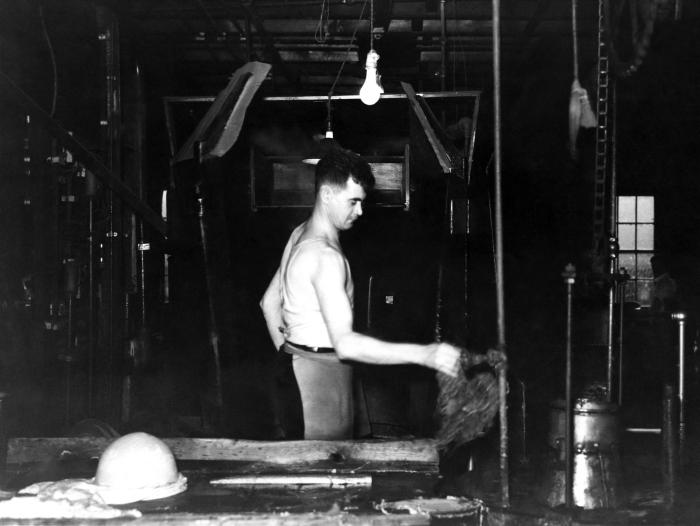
This historical image was provided by the Center for Disease Control's (CDC), National Institute for Occupational Safety and Health (NIOSH). The photograph depicted a hat manufacturing industry worker as he was removing newly made felt from a cone inside a hat-making factory. Note that the man was wearing no protective accessories including a filtered breathing mask, goggles, or gloves, and his hard-hat had been removed, and was left on the processing table.